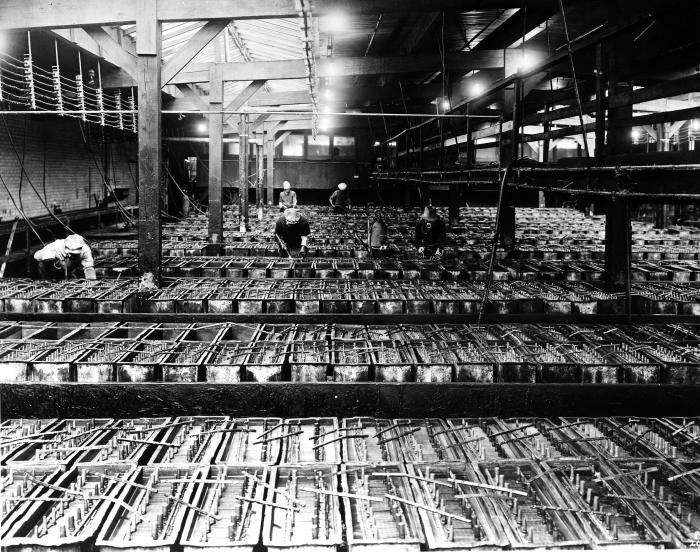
Published in the 'Public Health Bulletin', No. 262, 1941, this historic image, which was provided by the Center for Disease Control's (CDC), National Institute for Occupational Safety and Health (NIOSH) depicted a battery factory in which workers were in the process of assembling storage batteries. As a device containing both lead, a toxic heavy metal, and acid, in the form of sulfuric acid, batteries are potentially dangerous, both in their finished state, as well as during their manufacture. Precautions need be taken when building a battery, including the use of goggles, gloves, and filtered breathing devices. These accessories were being implemented by these workers. In gaining a better understanding of workplace hazards, through hands-on and on-site information acquisition, protocol-formulating bodies such as NIOSH, are better able to create a safer workplace through substantiation of appropriate safety regulations.